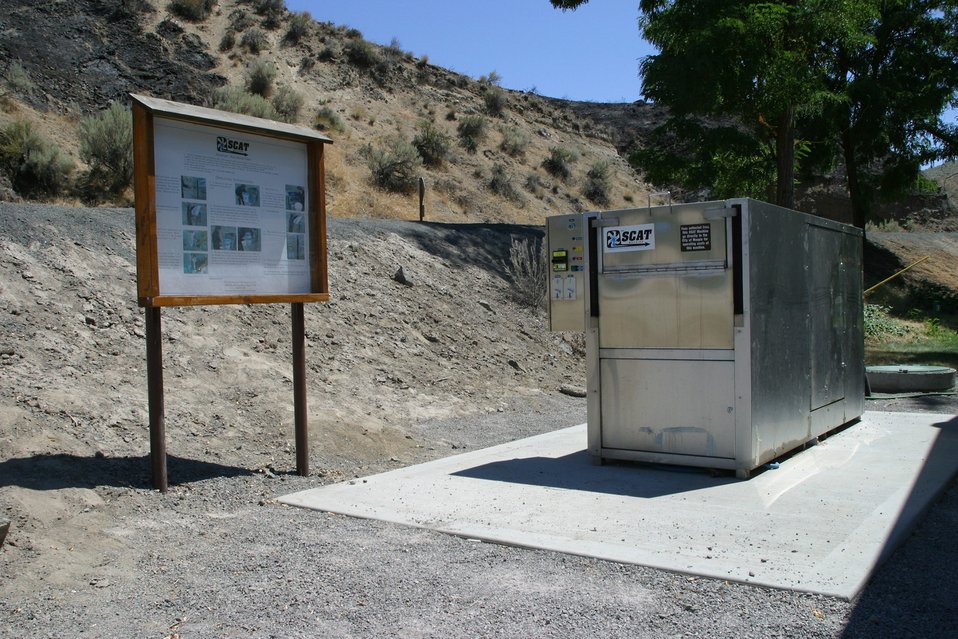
BLM Scat Machine located at the Maupin City Park.